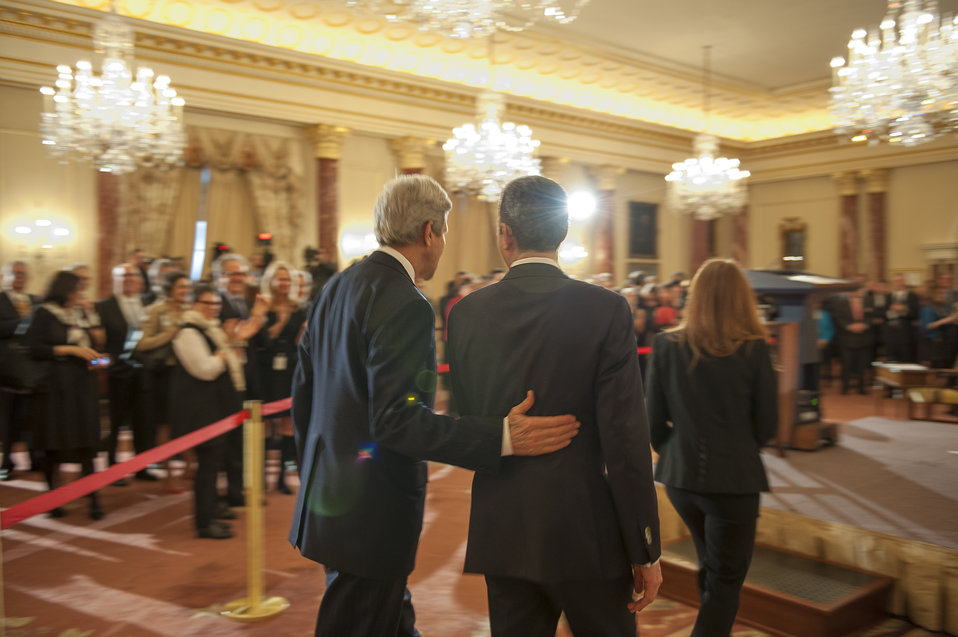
Secretary Kerry and Under Secretary Stengel Prepare to Deliver Remarks

U.S. Secretary of State John Kerry and Under Secretary for Public Diplomacy and Public Affairs Rick Stengel prepare to deliver remarks at Under Secretary Stengel's swearing-in ceremony at U.S. Department of State in Washington, D.C., on April 15, 2014.